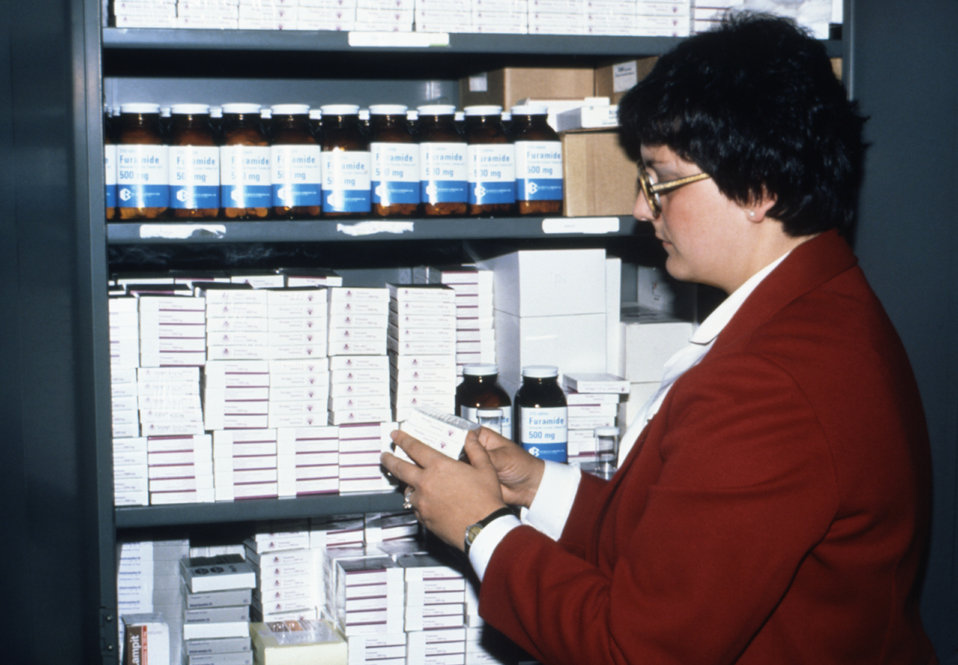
This 1981 photograph depicts a CDC employee as she stands in front of a drug repository.